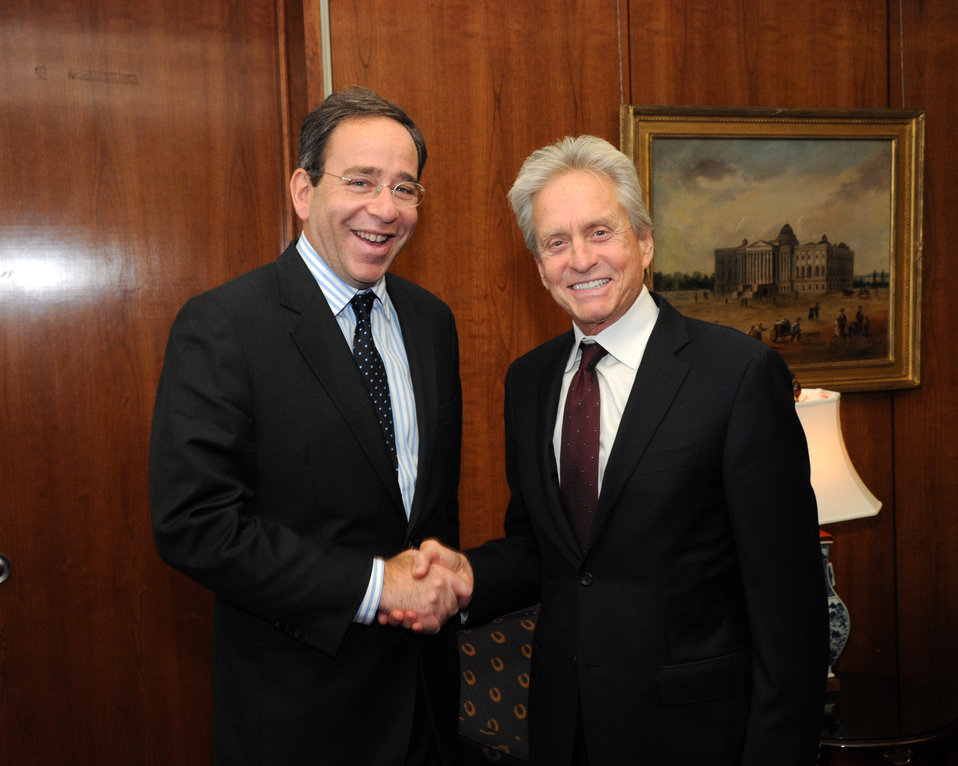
Actor Michael Douglas Shakes Hands With Deputy Secretary Nides

Actor Michael Douglas, right, shakes hands with Deputy Secretary of State Thomas Nides, left, during his visit to the U.S. Department of State in Washington, D.C., on November 3, 2011.